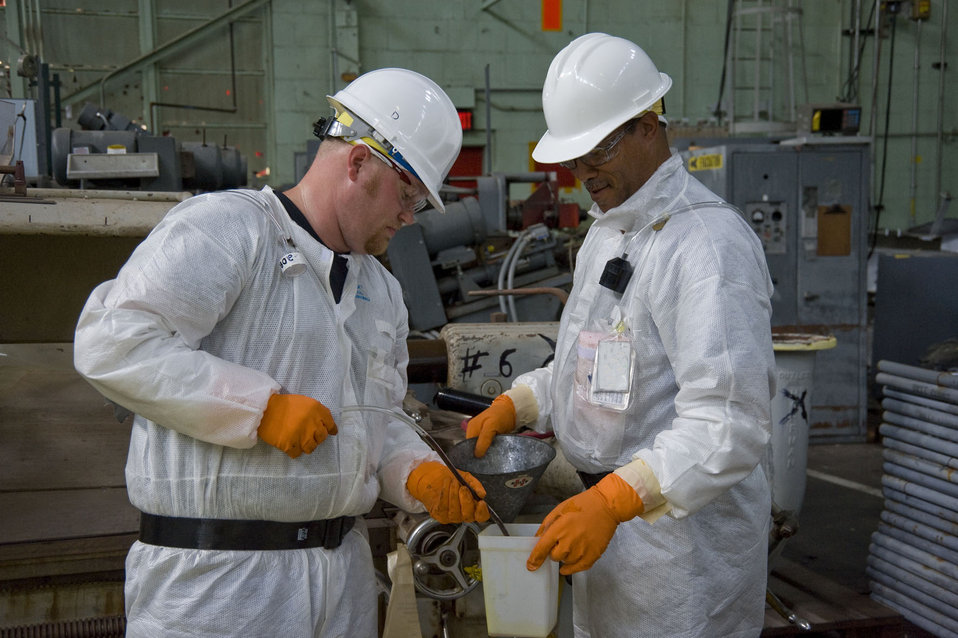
Skilled Workers Bruised by Recession Find New Start in Oak Ridge Recovery Act Work

Efforts to clean up waste from the Manhattan Project and the Cold War are under way at the Y-12 National Security Complex. The seven projects there funded by $216 million from the Recovery Act are providing work for more than 1,500 Americans, many of whom had struggled in the recent recession.

In addition to the work at Alpha 5 and Beta 4, Recovery Act projects at Y-12 include the West End Mercury Area storm sewer cleanup project, removal of soil contaminated with mercury, and the cleanup of a 7-acre scrap yard. In January 2011, Recovery Act workers completed the demolition of Building 9211 at Y-12, which reduced the footprint of the Cold War legacy by more than 83,000 square feet.